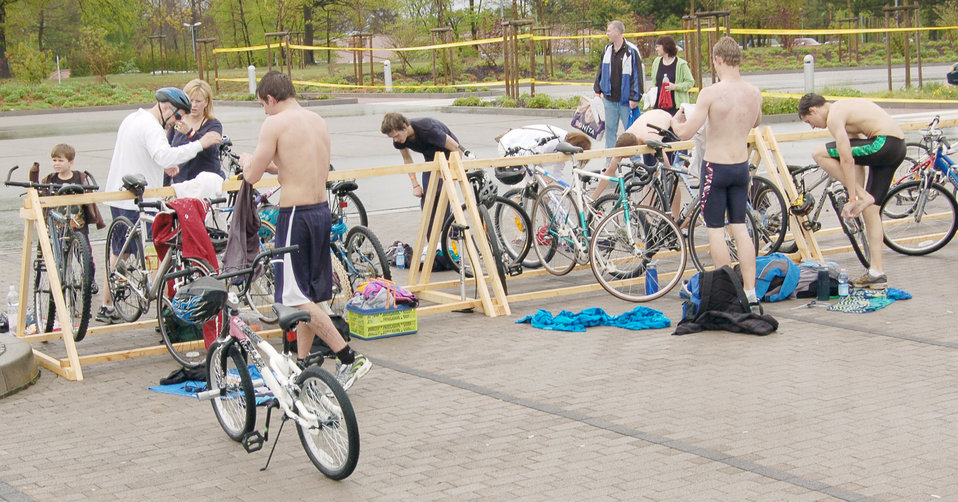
Triathlon kicks off fitness month, brings families together

Youth transition from the swimming to the biking portion of the second annual FitFactor Triathlon May 2, 2010, at Ramstein Air Base, Germany. Participants biked either three or 11 miles, depending on their age category.